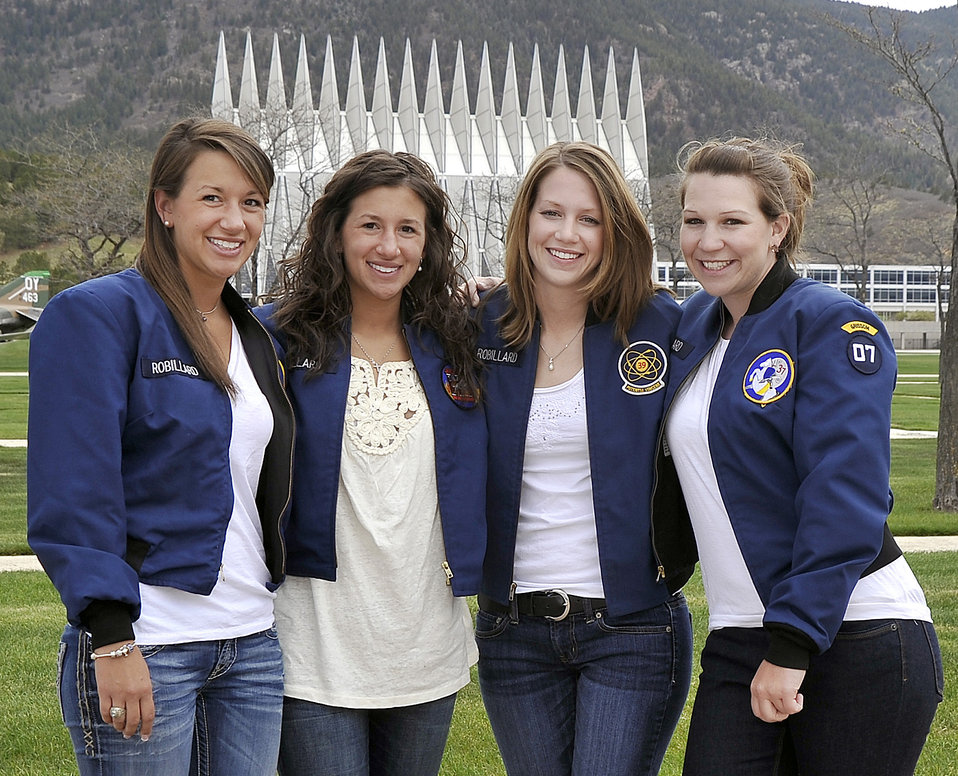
Sisters' legacy makes Academy history

The Robillard sisters became the first family to have four sisters graduate from the institution May 25, 2011, in Colorado Springs, Colo. They are, from left, Amanda and Alicia, Class of 2011; Nicole, Class of 2009; and Lauren, Class of 2007.